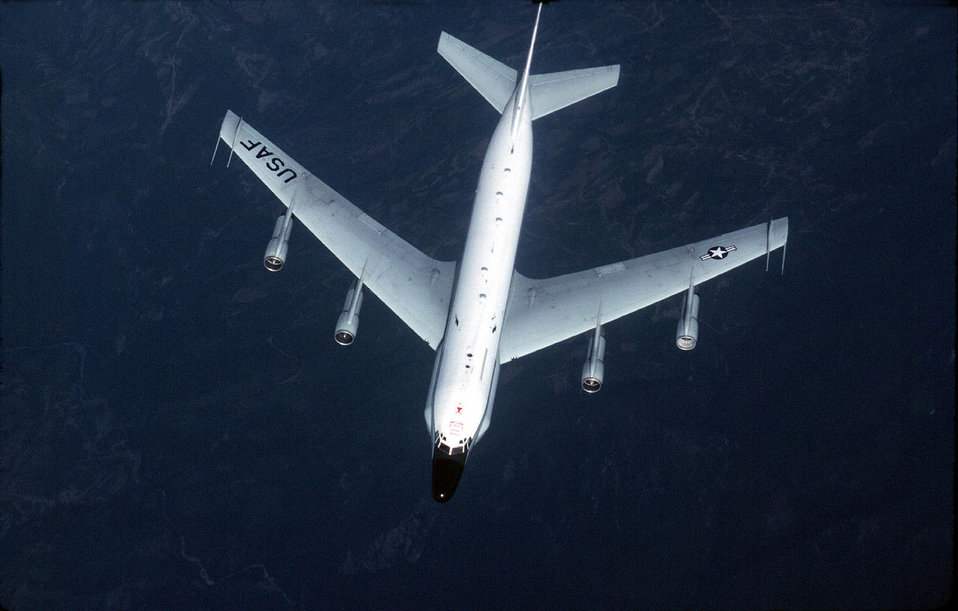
Rivet Joint

FILE PHOTO -- The basic airframe of the RC-135 resembles that of a slightly larger Boeing 707 from which it is derived. Having a long service career, RC-135s originally flew from remote bases in Alaska and elsewhere to collect data on Soviet ballistic missile testing during the Cold War. With the use of passive sensors, the RC-135 gathers imagery intelligence, telemetry intelligence and signals intelligence.